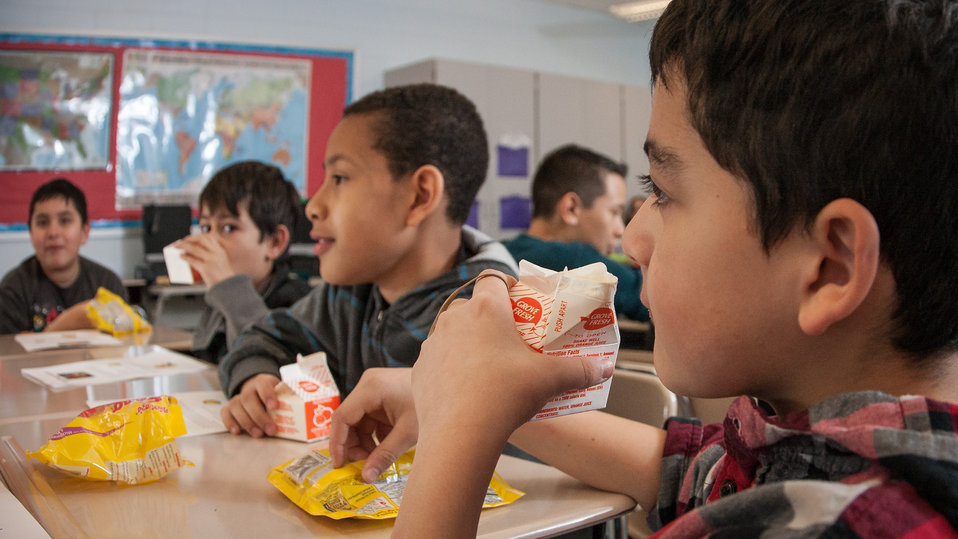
A Harmony Hills Elementary School student in Silver Spring, MD, does not care for orange juice in the morning, but drinks it anyways because he know it's good for him, on Friday, March 8, 2013. Today is the inaugural International School Meals Day and Mr. Damien Grasso's 5th grade class, was paired with Mrs. Karen McAllister’s class at Dalry Primary School in North Ayrshire, United Kingdom using a real-time online video connection; the children are able to share some of the healthy eating and physical activity choices available to them. USDA's Food and Nutrition Service administers several programs that provide healthy food to children including the National School Lunch Program, the School Breakfast Program, the Child and Adult Care Food Program, the Summer Food Service Program, the Fresh Fruit and Vegetable Program, and the Special Milk Program. Administered by State agencies, each of these programs helps fight hunger and obesity by reimbursing organizations such as schools, child care centers, and after-school programs for providing healthy meals to children. Harmony Hills participates in the Maryland Meals for Achievement (MMFA), In-Classroom breakfast program, the fresh fruit and vegetable program, and the summer food service program. Learn more by visiting www.fns.usda.gov and twitter @USDANutrition.